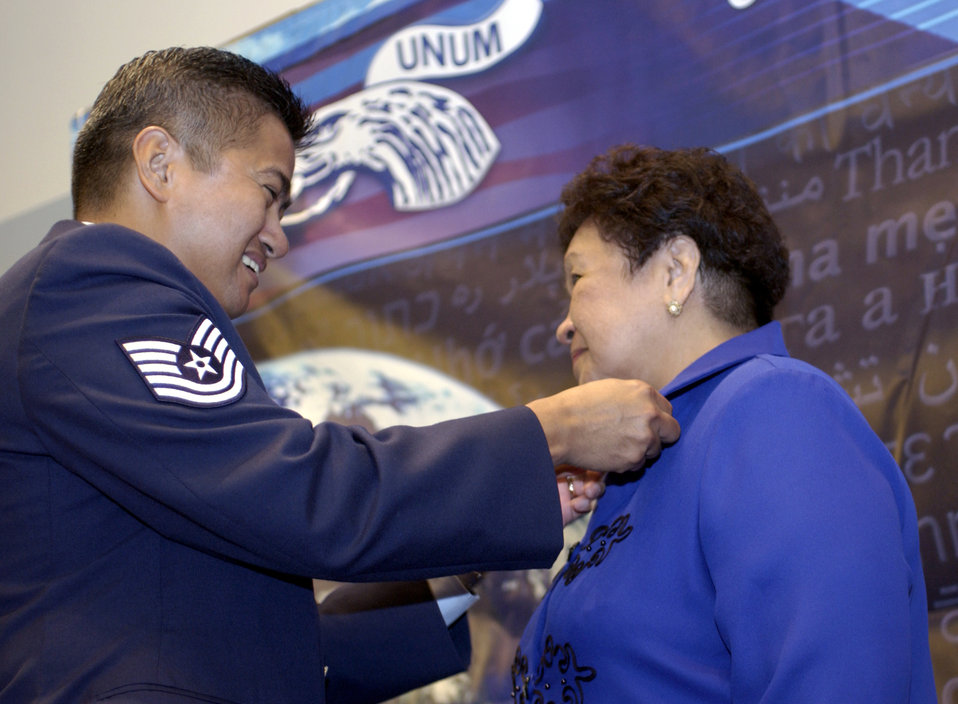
Bisco

WASHINGTON -- Tech. Sgt. Ares Bisco pins a Parent Pin on his mom, Mila Bisco, during a ceremony launching